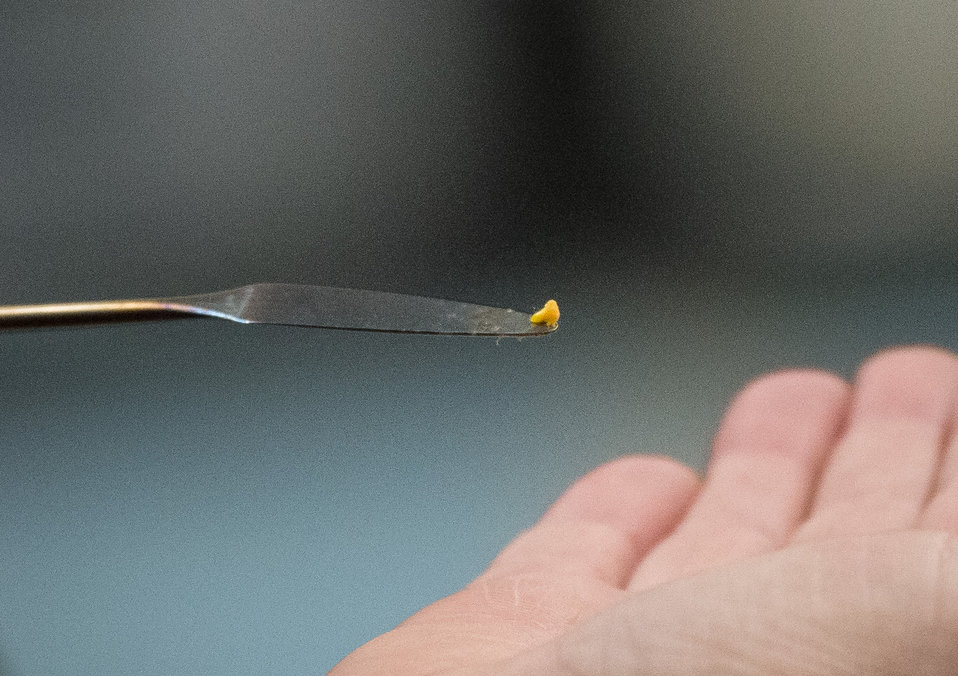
Scientists extract seed embryos from acorns as part of the research being conducted at the U.S. Department of Agriculture (USDA), Agriculture Research Service (ARS), National Center for Genetic Resources Preservation (NCGRP), Plant Germplasm Preservation Research Unit (PGPRU), in Ft. Collins, CO, on Wednesday, Nov. 6, 2013.